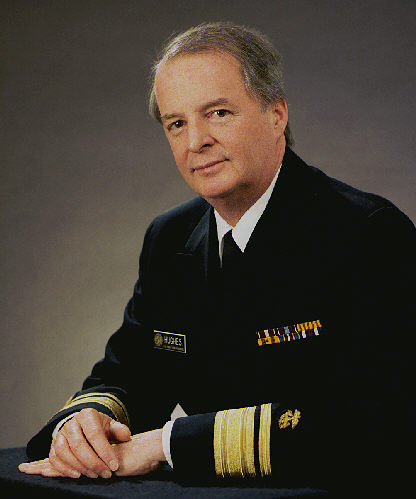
James M. Hughes, M.D., Director of the National Center for Infectious Diseases.